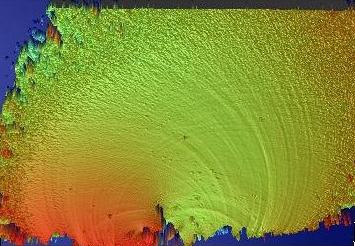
Glass Rod

Optical profilometer image of the broken surface of a glass rod shows height of peaks (yellows and reds) and valleys (blues and purples) of the fracture surface in millionths of a meter. Curved ribs reveal the path of the stress waves through the glass. Image shows an area 1 x 1.3 millimeters.